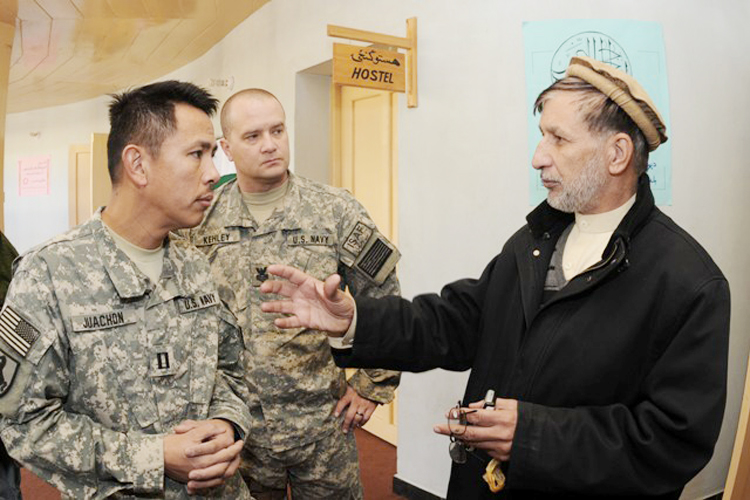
Provincial government, American servicemembers dedicate midwifery program in Afghanistan

Dr. Mohammed Asif (right) gives a tour to Navy Lt. Jed Juachon (left) and Navy Petty Officer 1st Class Klint Kehley of the Kunar Midwifery Program training center Dec. 22 in Asadabad, Afghanistan. The midwifery program will train 24 women from Kunar province in an 18-month long course on providing prenatal and postpartum care to expectant mothers and their babies to decrease infant mortality rates. Doctor Asif is the Kunar director of midwifery program and provincial institutional development adviser. Lieutenant Kehley is a Kunar Provincial Reconstruction Team medical officer. Petty Officer Kehley is a PRT medical department supervisor.